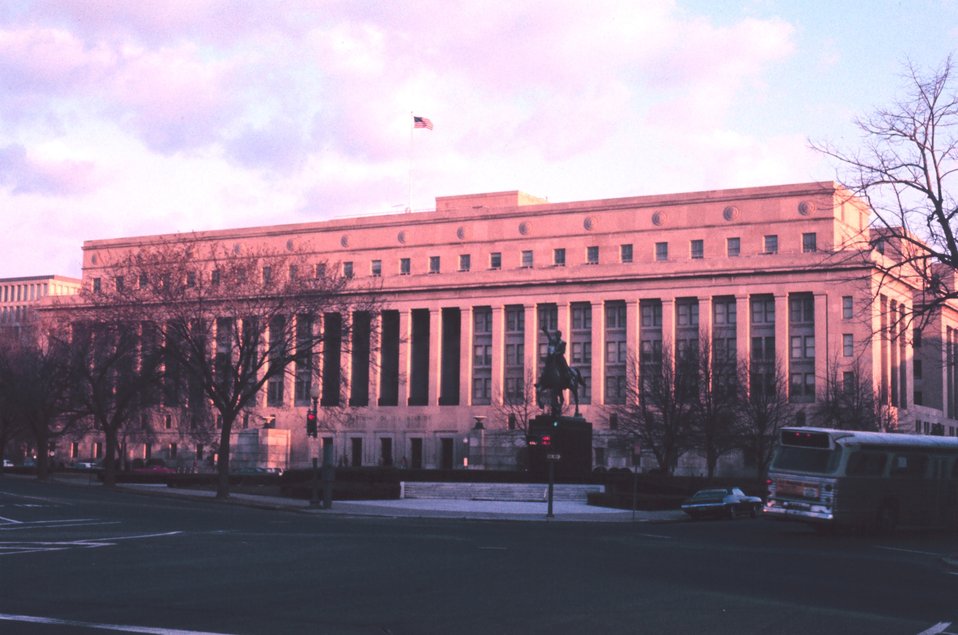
The Interior Department Building, formerly home to the Bureau of Commercial Fisheries, forerunner of today's National Marine Fisheries Service